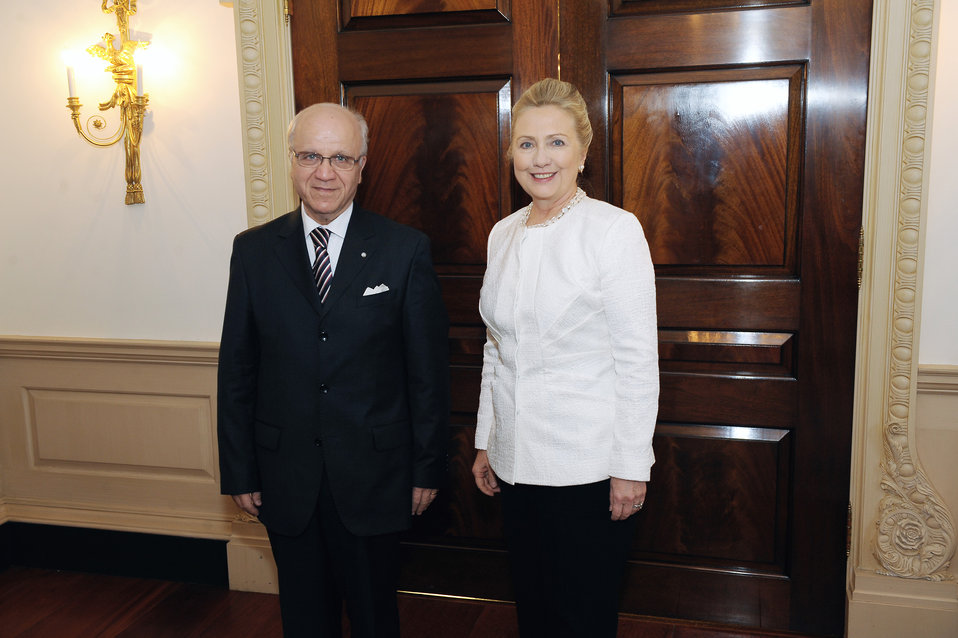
Secretary Clinton Poses for a Photo With Algerian Foreign Minister Medelci

U.S. Secretary of State Hillary Rodham Clinton poses for a photo with Algerian Foreign Minister Mourad Medelci before their meeting at the U.S. Department of State in Washington, D.C., on January 12, 2012.